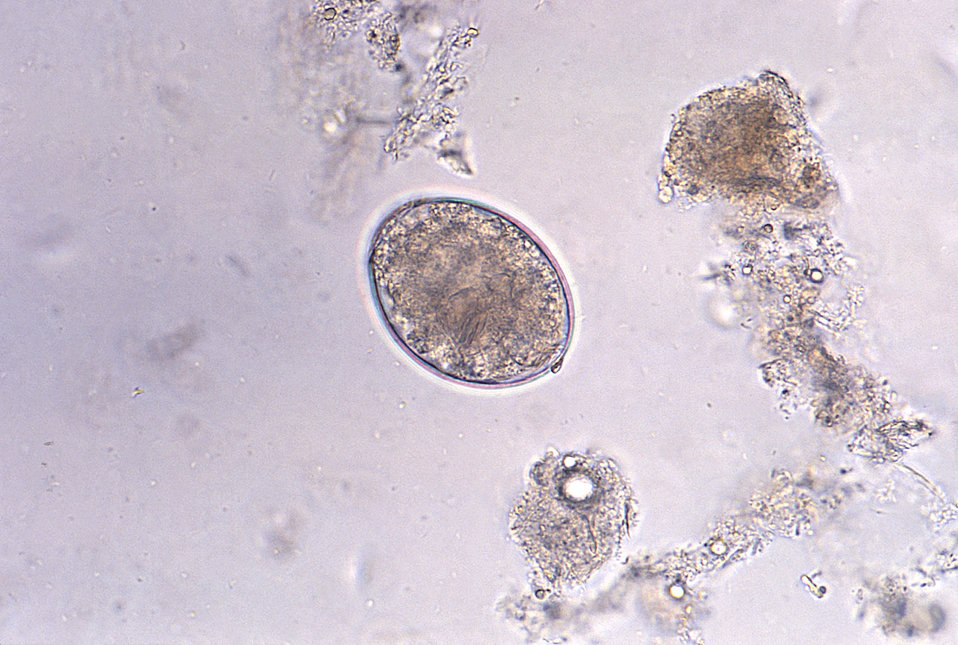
Under a high magnification of 400X, this photomicrograph revealed the presence of a cestode, Diphyllobothrium latum, or 'broad' tapeworm, egg, which is described as oval or ellipsoidal, and range in size from 55�m to 75�m by 40�m to 50�m. There is an operculum at one end that can be inconspicuous, and at the opposite (abopercular) end is a small knob that can be barely discernible. The eggs are passed in the stool unembryonated.